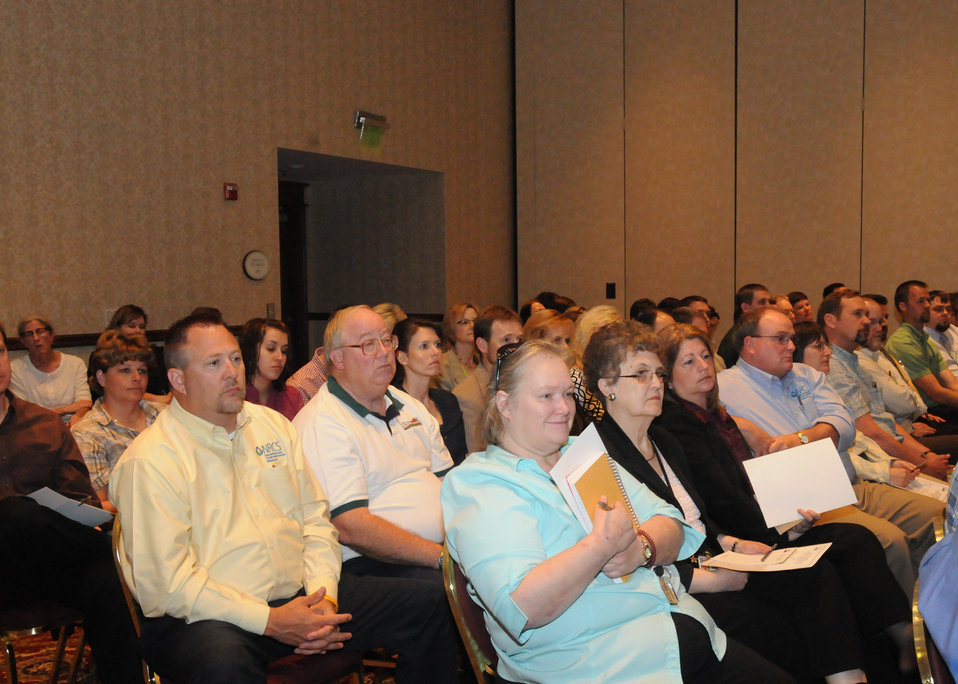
The U.S. Department of Agriculture (USDA) held the third of six Cultural Transformation Employee listening sessions in Kansas City, MO, on Wednesday, April 14, 2010. USDA employees expressed their concerns with issues at the Department and made suggestions for correcting them and improving the image of USDA. USDA photo 10di1309-197.